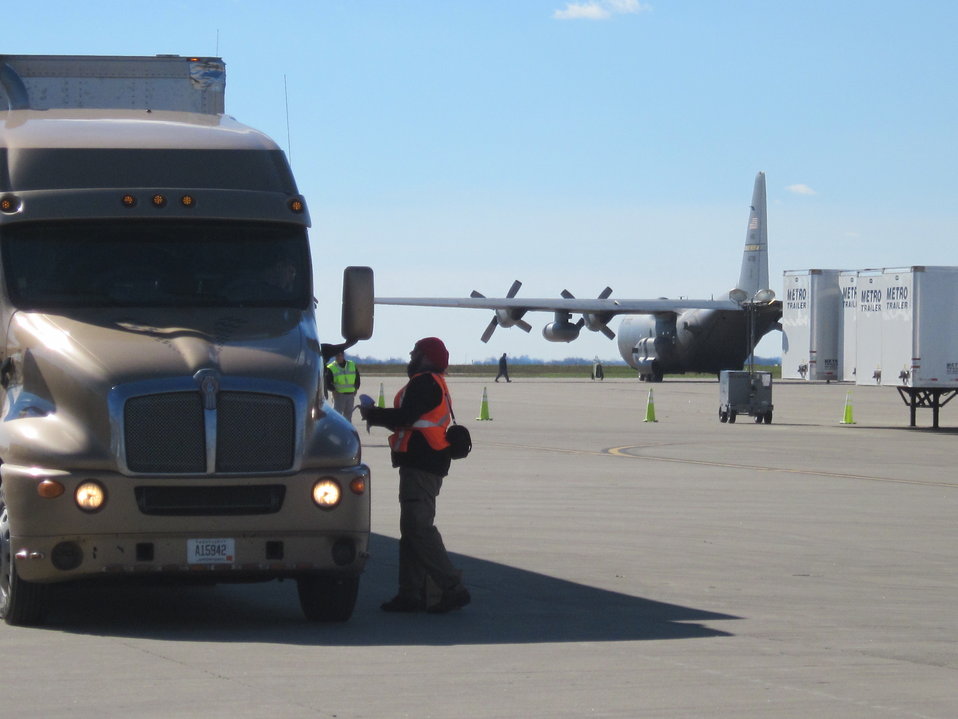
Tracking trucks

Charleston, WV, Nov. 2, 2012: Josh O'Connor, Division Supervisor of the Southern Area Red Type 1 Incident Management Team helps track trailers of storm relief supplies at a Logistical Staging Area at Yeager Airport. O'Connor was on a FEMA assignment with the team. Food, water, generators and other supplies were collected and distributed by the National Guard for storm victims. About 700 pallets of water and 300 pallets of food were distributed.O'Connor is a fire management specialist at the Atlanta, Georgia Regional Office of the U.S. Fish and Wildlife.